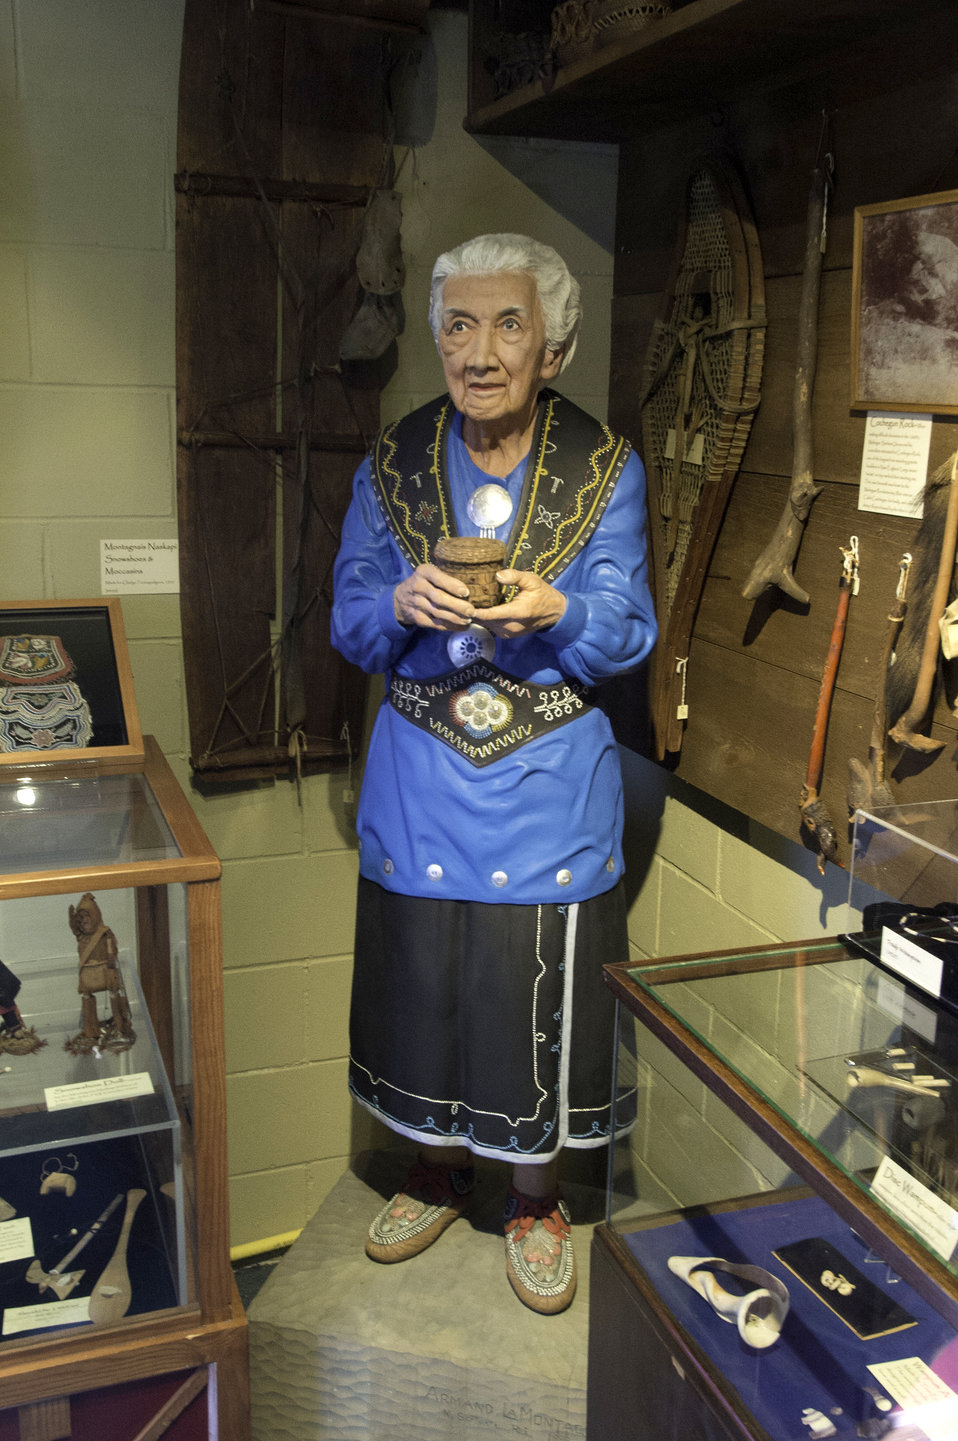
This a statue of Mohegan Medicine Woman Dr. Gladys Iola Tantaqudgeon on display at the Mohegan Tribal museum in Uncasville, CT on Nov. 19, 2013. Dr. Tantaqudgeon was born in 1899 and educated in tribal spirituality and herbalism by her grandmothers then studied anthropology at the University of Pennsylvania. She received an honorary doctorate from the University of Connecticut and Yale University in 1994. In the 1990s, Dr. Tantaqudgeon’s personal records of correspondence regarding Mohegan births, graduations, marriages and deaths were critical to proving the Mohegan case for Federal Recognition in 1994. Some of Dr. Gladys Iola Tantaqudgeon’s list of accomplishments include: obtaining an Ivy League education as a non-white woman in the 1920s; co-founding Tantaquidgeon Museum in 1931; social work for the Bureau of Indian Affairs in the mid-to-late 1930s; economic development work for the Indian Arts and Crafts Board, late 1930s and 1940s; preserving traditional Mohegan spirituality; writing on traditional Native herbal remedies; working to save traditional Native ceremonies and art forms; preserving the meaning of traditional Mohegan symbols; and passing on and recording old Native American stories.